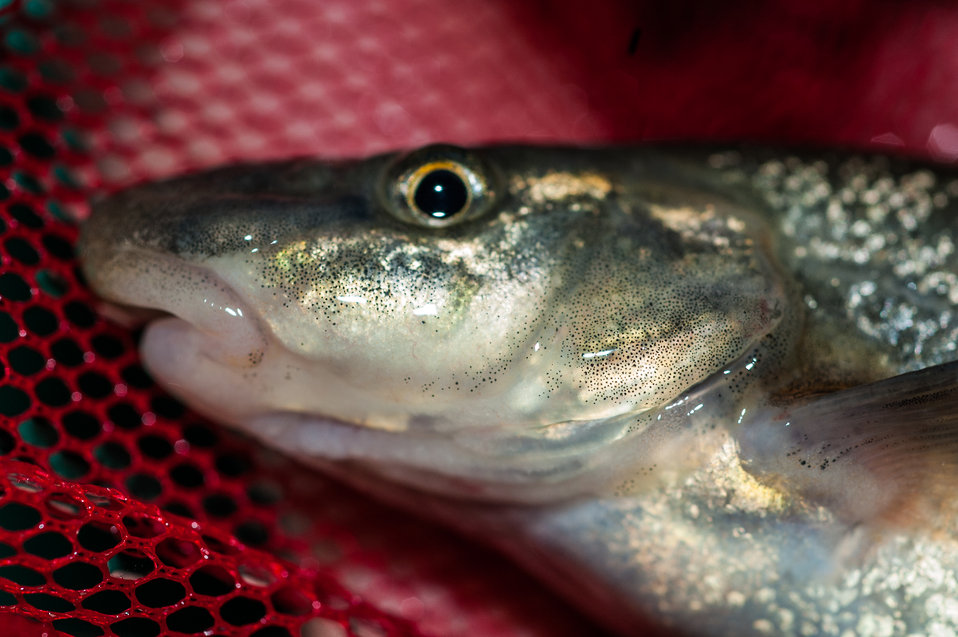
Longnose Dace

Check out the camouflage on this Longnose Dace. The Longnose Dace prefers to make it's home at the bottom of cool to moderately cool streams and rivers where they can hide among the rocks and gravel. You can see from this image the micro-camouflage, the small black spots that look like grains of sand, that they have adapted to survive in this benthic environment.